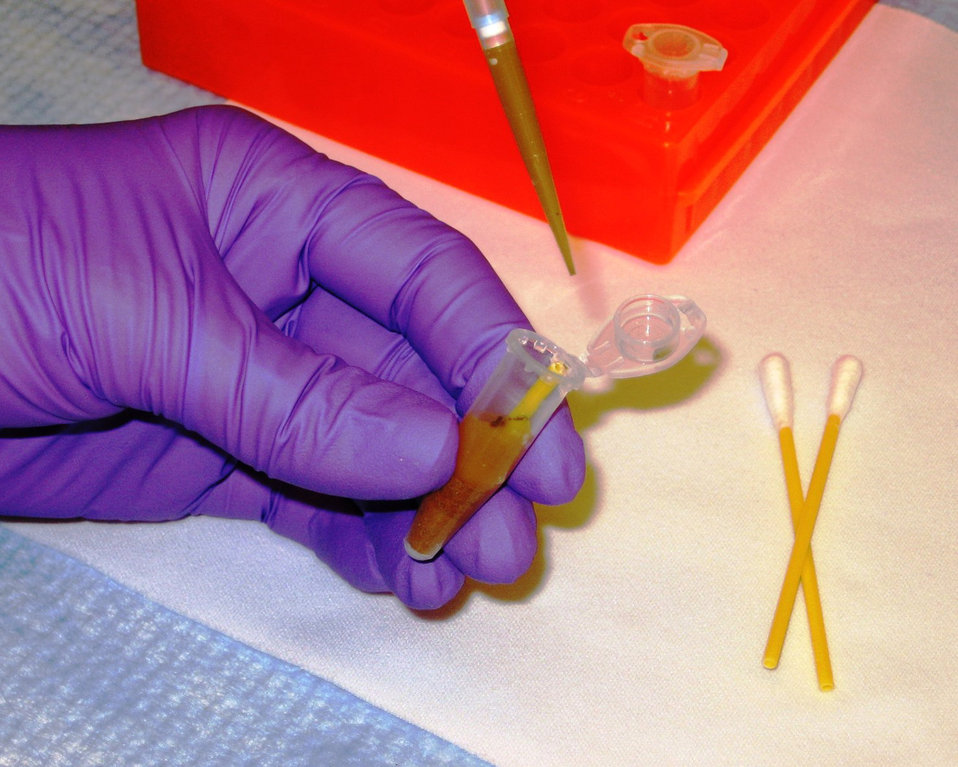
Laboratory Technician Pipettes Dirt

A laboratory technician pipettes dirt dissolved in a buffer solution from which DNA will be recovered using a novel NIST/Applied Research Associates microfluidic extraction technique. The dirt, originally collected on a swab (lower section seen in vial) like those on the right, is an example of a crude sample from which DNA for human identification has typically been difficult to obtain.